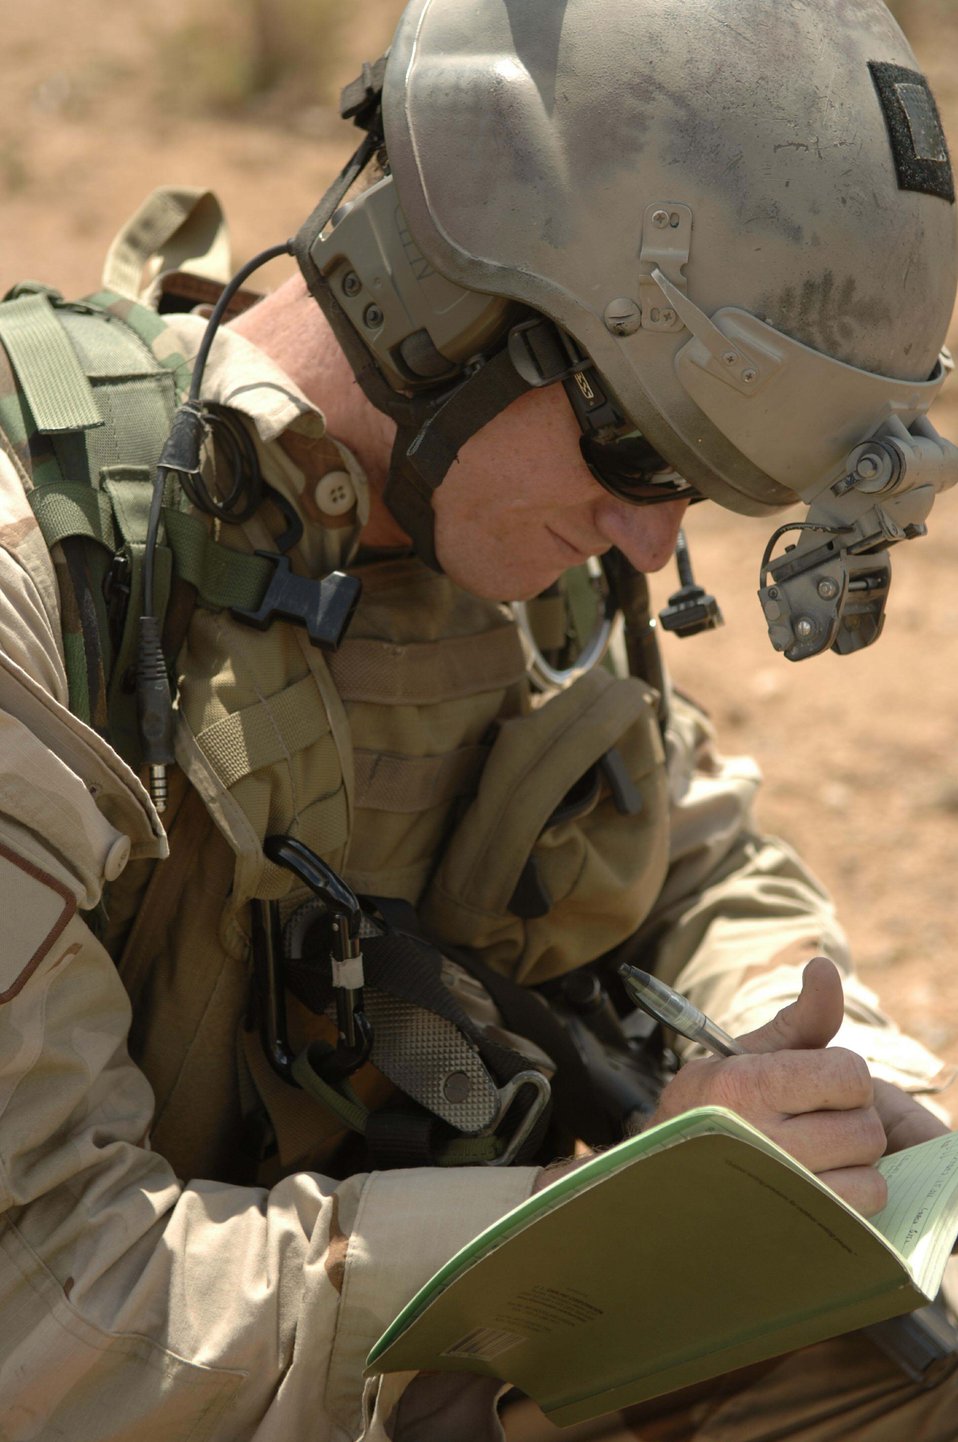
Angel Thunder

Senior Airman Jeffrey Hamilton coordinates his position as part of a recovery scenario July 26 for exercise Angel Thunder. Angel Thunder is a five-day exercise held at and around Davis-Monthan Air Force Base, Ariz. It is designed to provide realistic, full-spectrum recovery training for Air Force active-duty, Guard and Reserve combat rescue forces. Airman Hamilton is a pararescueman with the 48th Rescue Squadron.